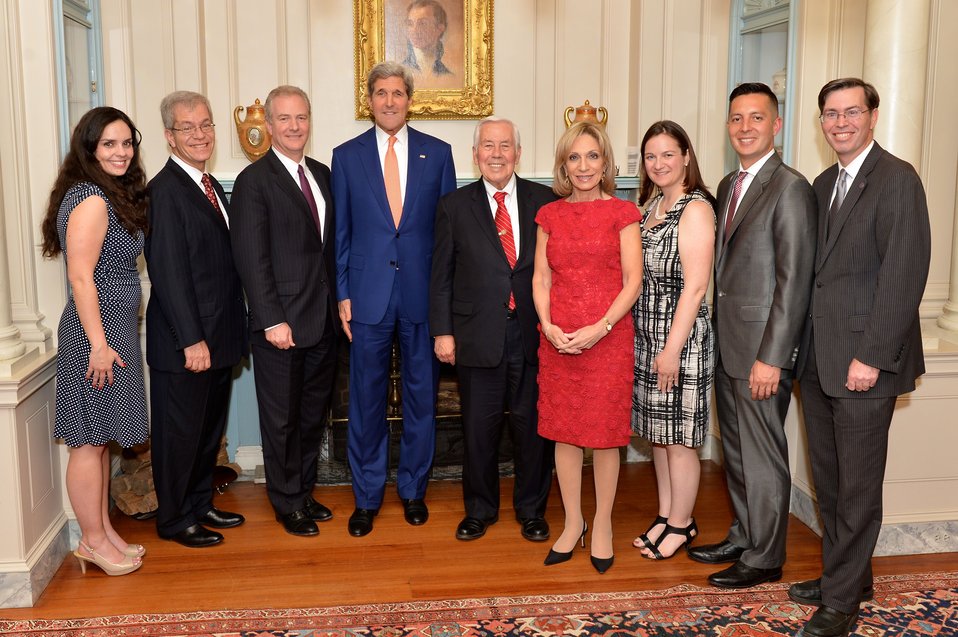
Secretary Kerry, AFSA President Silverman, Former Senator Lugar, Representative Van Hollen, and Andrea Mitchell at Celebration of 90th Anniversary of U.S. Foreign Service

U.S. Secretary of State John Kerry poses for a photo with American Foreign Service Association President Bob Silverman, former Senator Richard Lugar, U.S. Representative Chris Van Hollen, American journalist Andrea Mitchell, and others before delivering remarks at an event celebrating the 90th Anniversary of the United States Foreign Service at the U.S. Department of State in Washington, D.C., on May 22, 2014. The modern Foreign Service was created on May 24, 1924, with the passage of the Rogers Act establishing the current merit-based, professional Foreign Service.